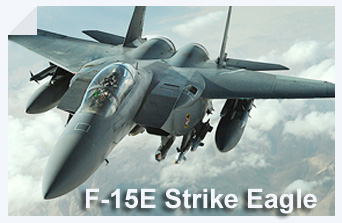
F-15E Strike Eagle

An F-15E Strike Eagle flies over Afghanistan. The F-15E's primary role in Afghanistan is providing close-air support for ground troops.